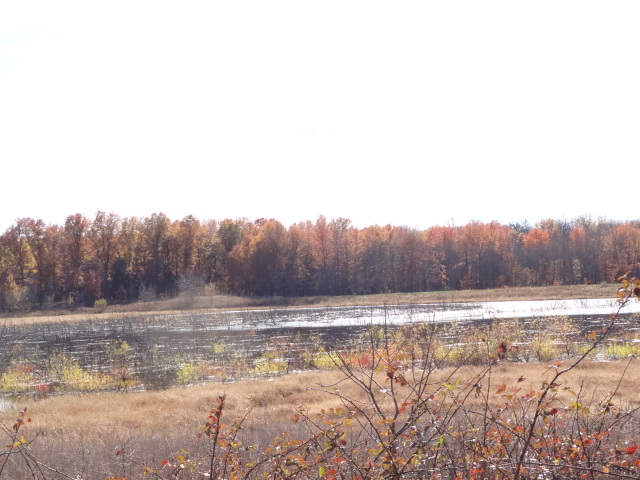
Fall Foliage Marais des Cygnes National Wildife Refuge

This is the view from the Refuge Headquarters in the Fall of 2012.